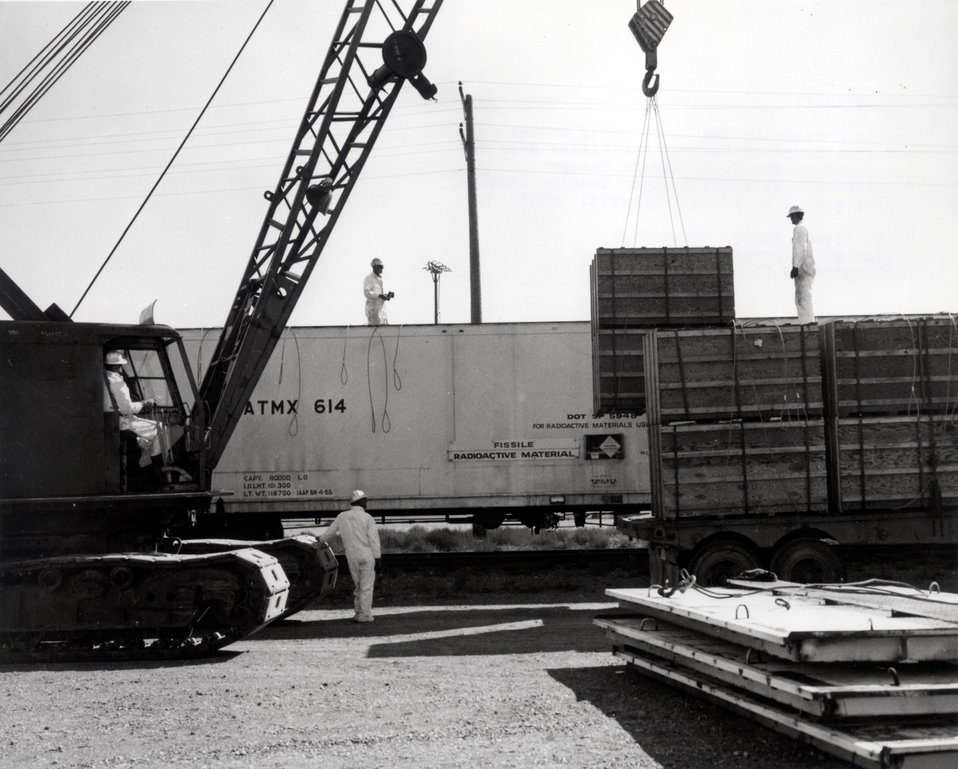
Crates containing low level solid wastes being unloaded at Central Facilities Area for transport. Circa 1974.